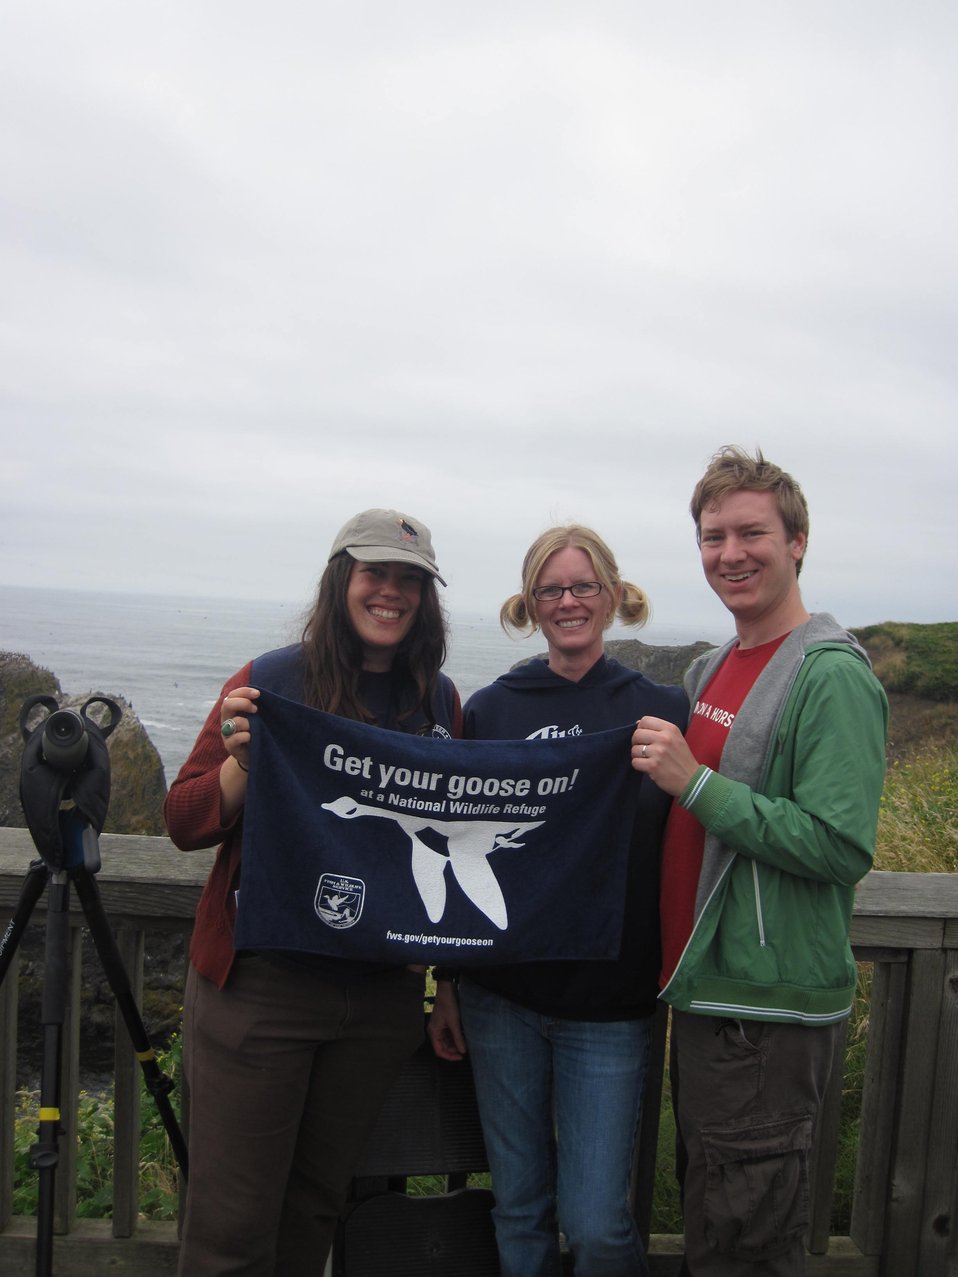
Get Your Goose On!

Kevin and Stacy Harbaugh from Asheville, NC do some birdwatching at Oregon Islands NWR and Get Their Goose On with USFWS Wildlife Education Intern Octavia Sola'.